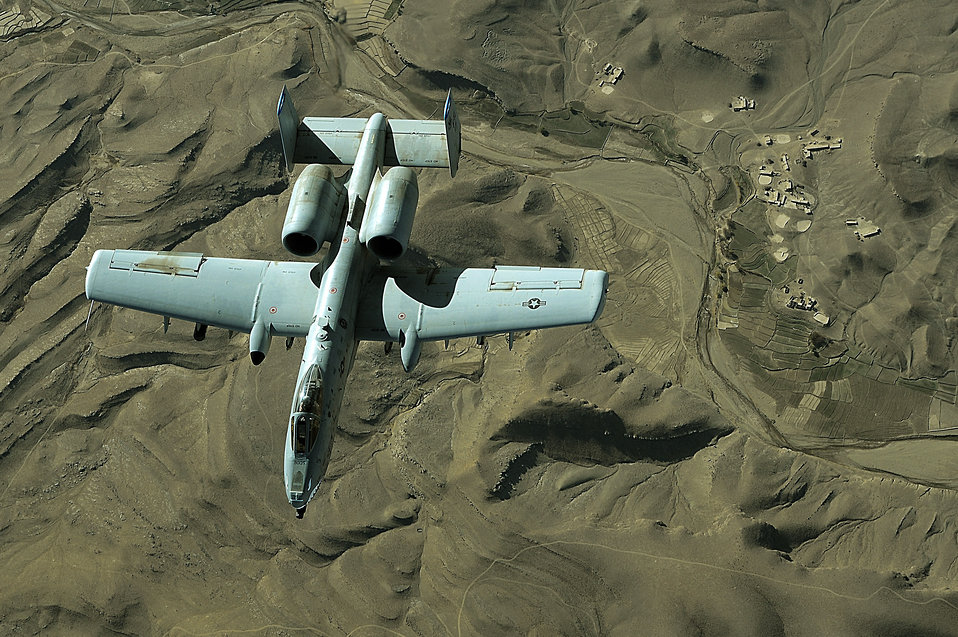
Nov. 25 airpower summary: A-10s deter anti-Afghan attacks

An Air Force A-10 Thunderbolt II flies a combat mission over Afghanistan in support of Operations Enduring Freedom. A-10s provide close-air support and perform sorties daily providing top cover for ground forces in Southwest Asia.